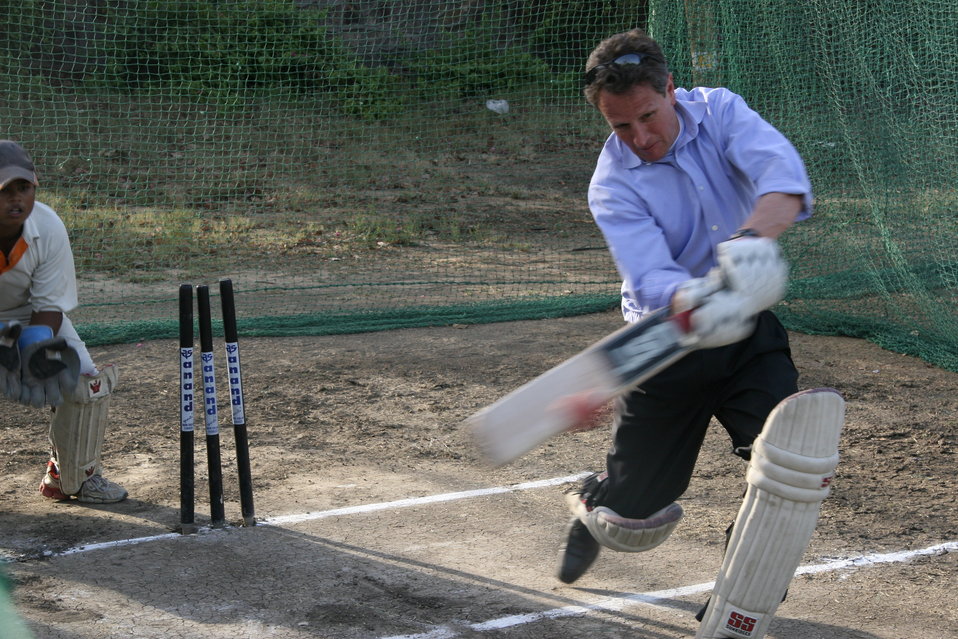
Secretary Geithner in India, 4/6/10

Secretary Geithner playing cricket while in India.